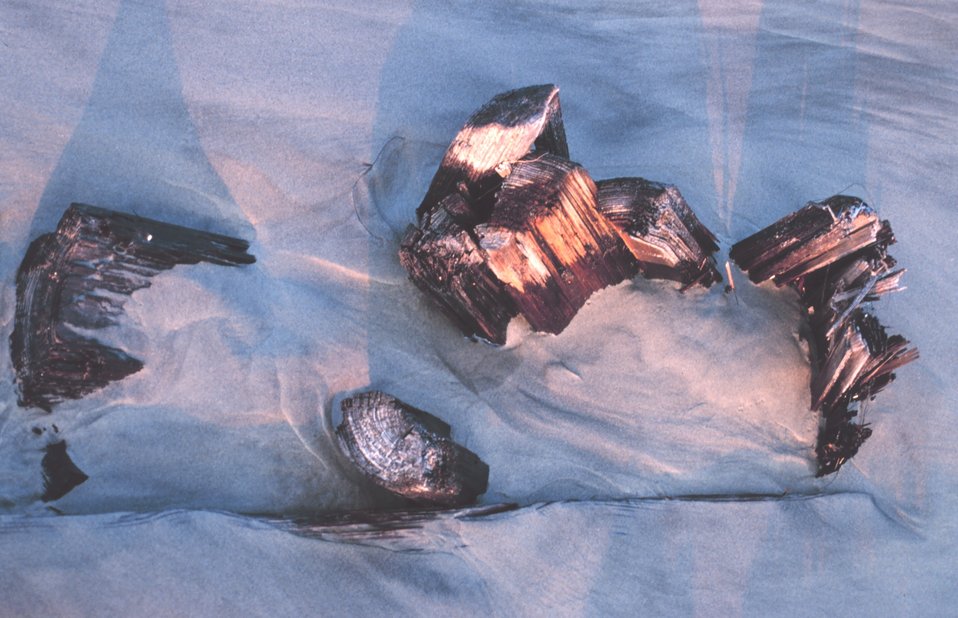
Perhaps the remains of a once noble ship or maybe only an old pier